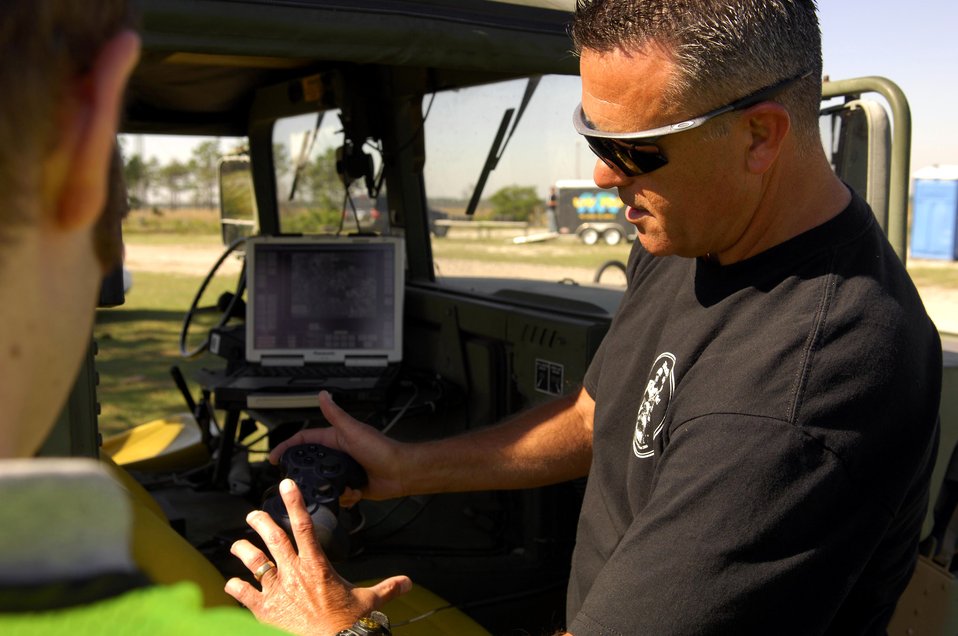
Battlefield technology key to Atlantic Strike V

Bob Raulerson, a marketing manager from Northrop Grumman, demonstrates the capabilities of